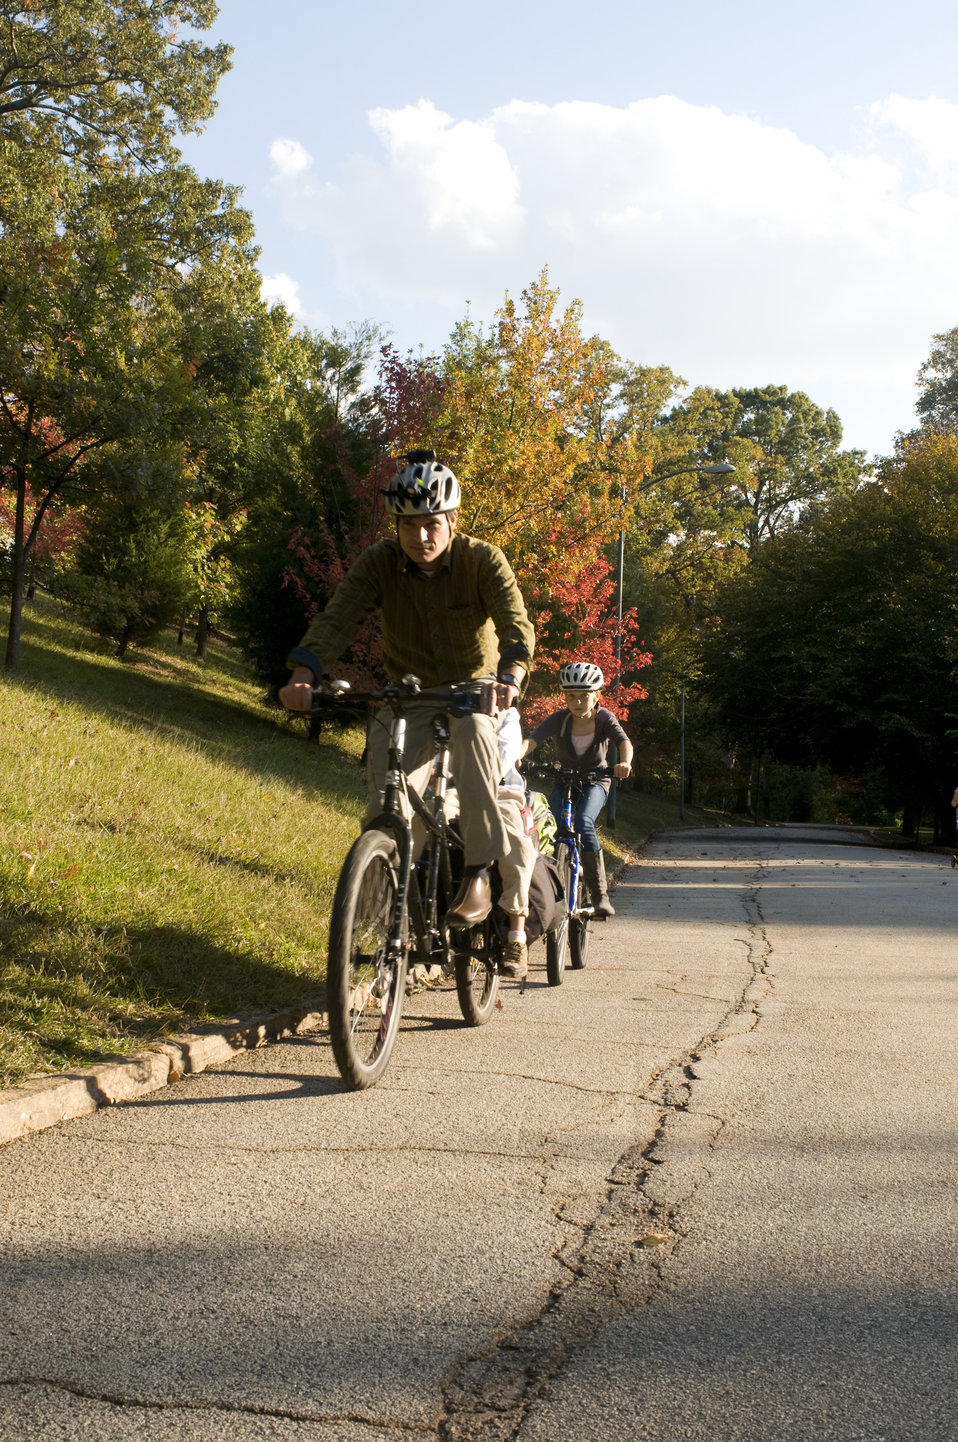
Protective measures having been taken by a careful father, this dad and his two young children were on their way, as they embarked on a Georgian bicycle trip. Riding behind her father, the daughter was riding her own bike, while the son, seated in a small child-safe bicycle seat, was riding on the same bike as his dad. All three were wearing aerodynamic safety helmets, and clothing to protect them from the sun, wind and insects. The only thing missing, was a piece of outerwear, which was very bright in color, allow for a greater degree of rider visibility.